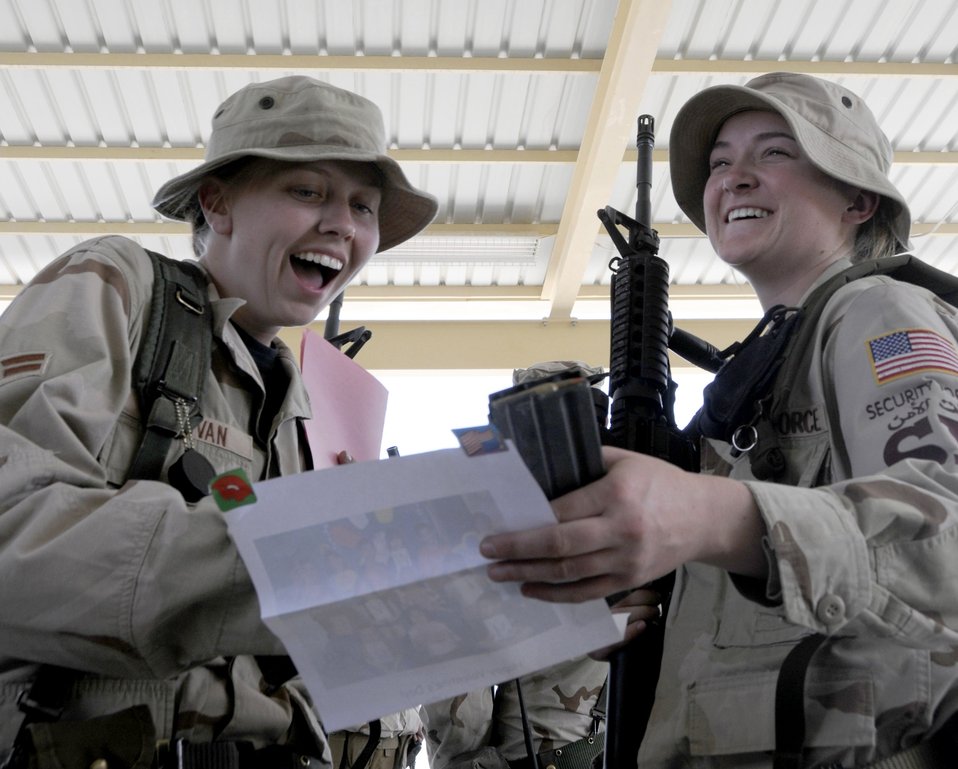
Texas schools send Valentines to Southwest Asia Airmen

Airmen 1st Class Kathleen Sullivan and Lindsay Judkins are surprised to receive Valentines from Texas elementary school students Feb. 13 at a Southwest Asia air base. Children from Merkel, Tye and Trent elementary schools sent more than 300 Valentines greetings thanking Airmen for their service and for keeping America free. Both Airmen are 379th Expeditionary Security Forces members and deployed from Schriever Air Force Base, Colo.